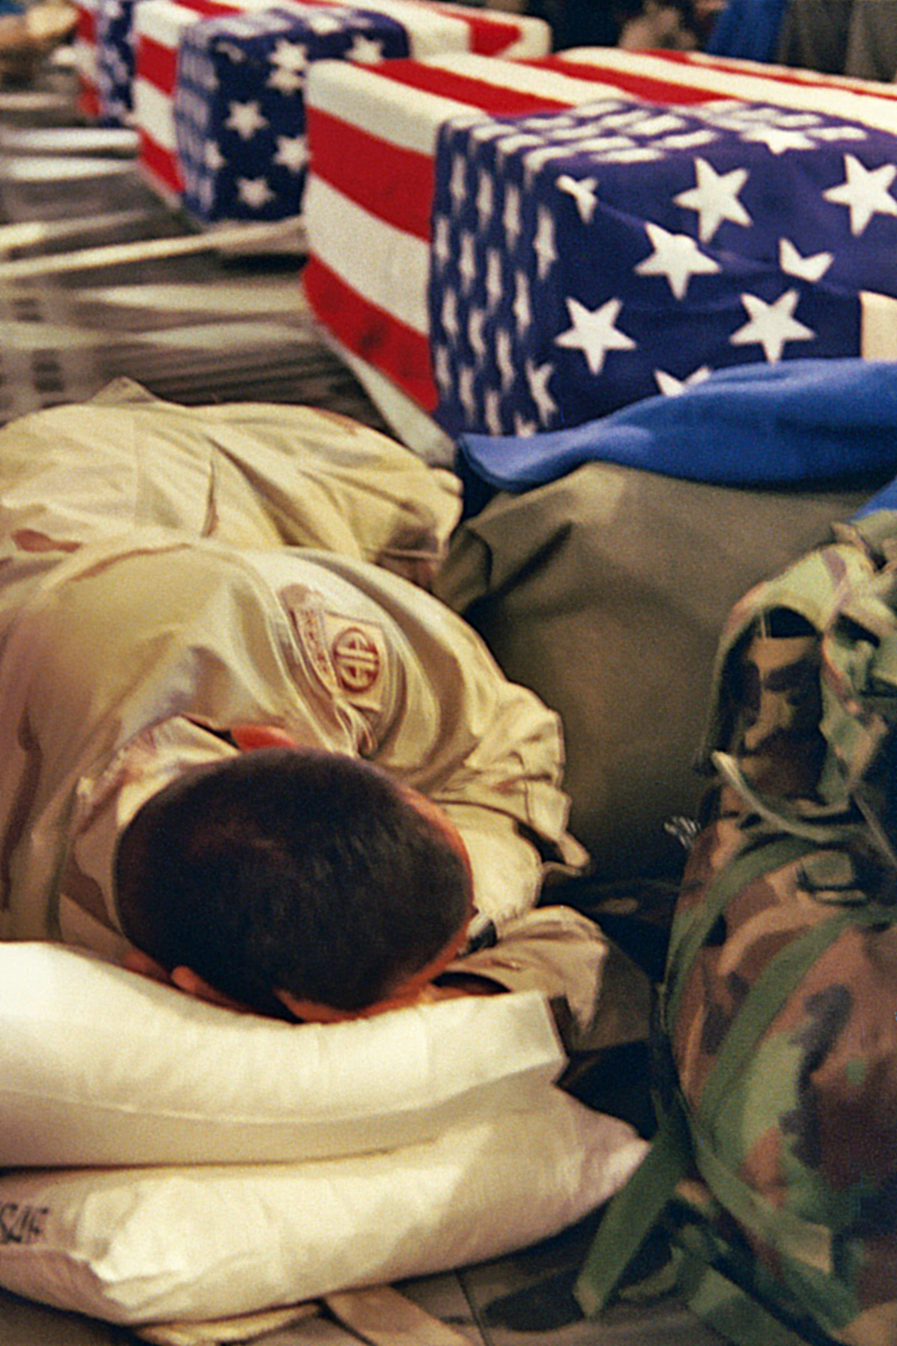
Somber journey home

OPERATION ENDURING FREEDOM -- Army Sgt. Osvaldo Ortiz sleeps next to the transfer case and gear of his fallen friend aboard a C-17 Globemaster III bound for Dover Air Force Base, Del., on June 29. Ortiz is accompanying the remains to the base and eventually back to the fallen soldier's home in Puerto Rico.